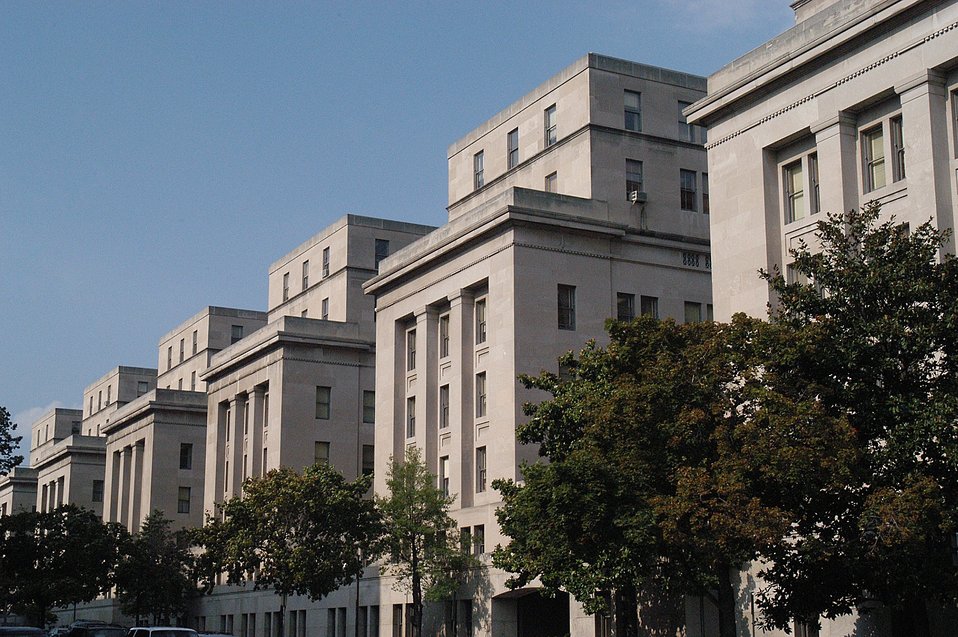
Department of the Interior building in Washington DC on 1849 C Street N.W. Photo by Tom Iraci, July 2004.